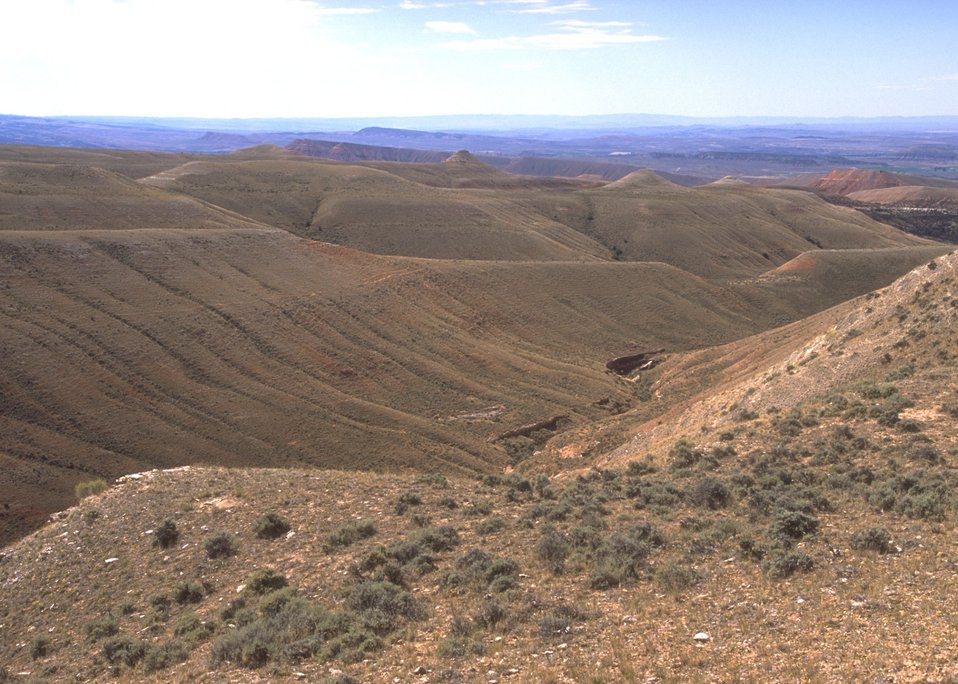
View along the Red Gulch/Alkali Back Country Byway, Worland Field Office.